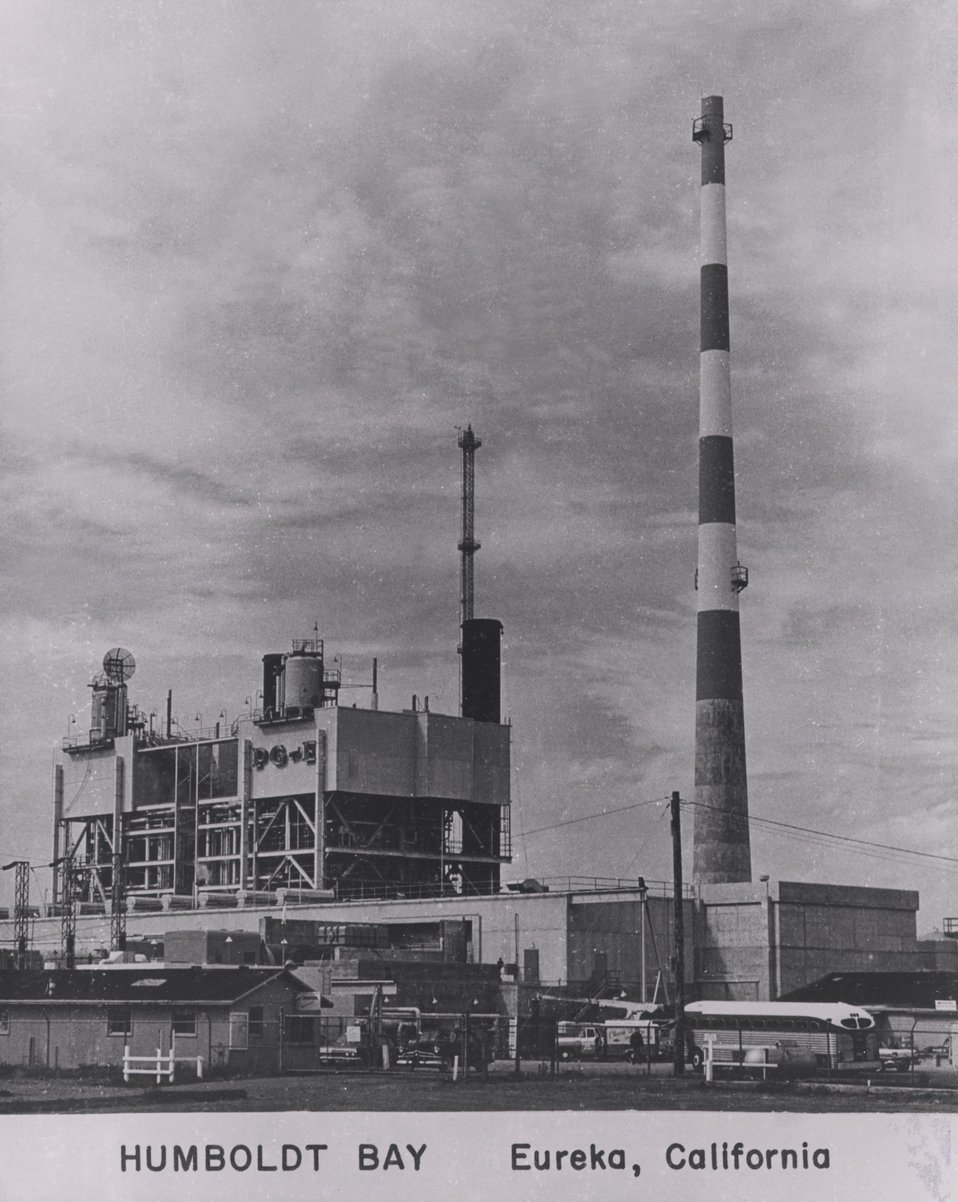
48,500 electrical kilowatt boiling water reactor at Humbolt Bay.